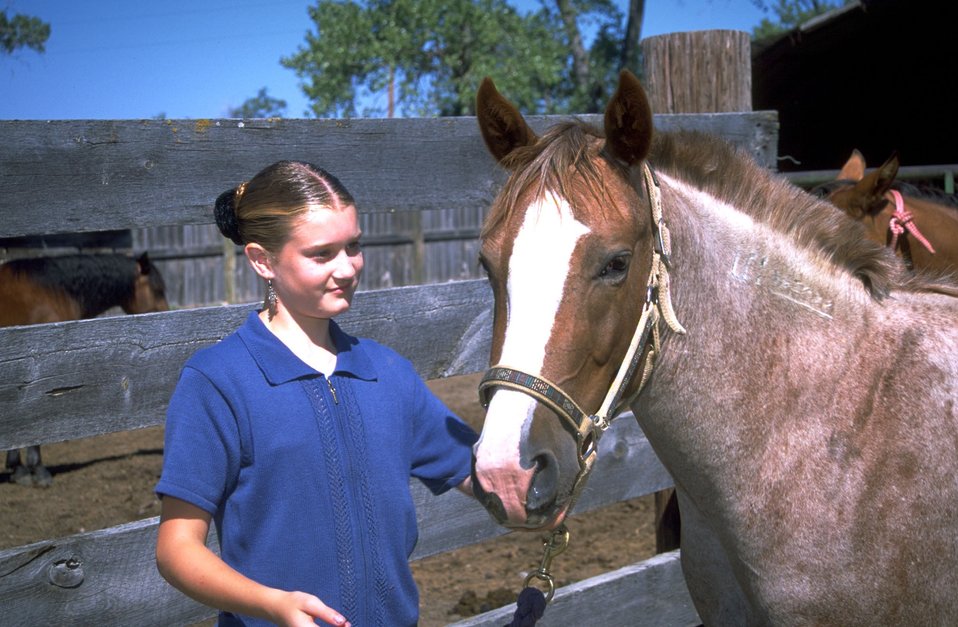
Adopted Appaloosa Horse